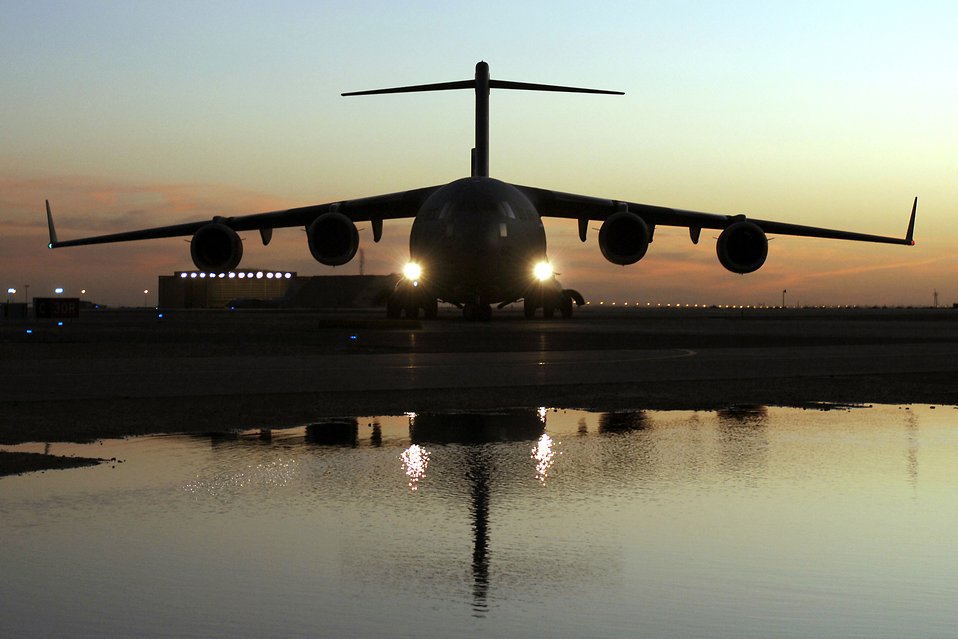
Global reach

A C-17 Globemaster III prepares to take off Jan. 17 from an undisclosed location in Southwest Asia.